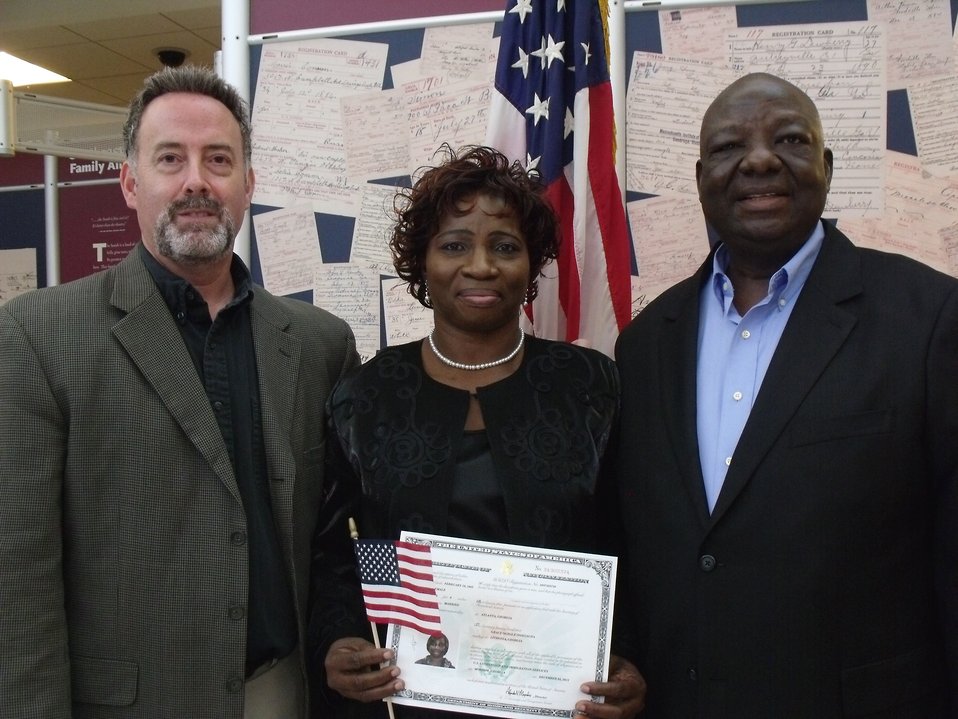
New Citizens